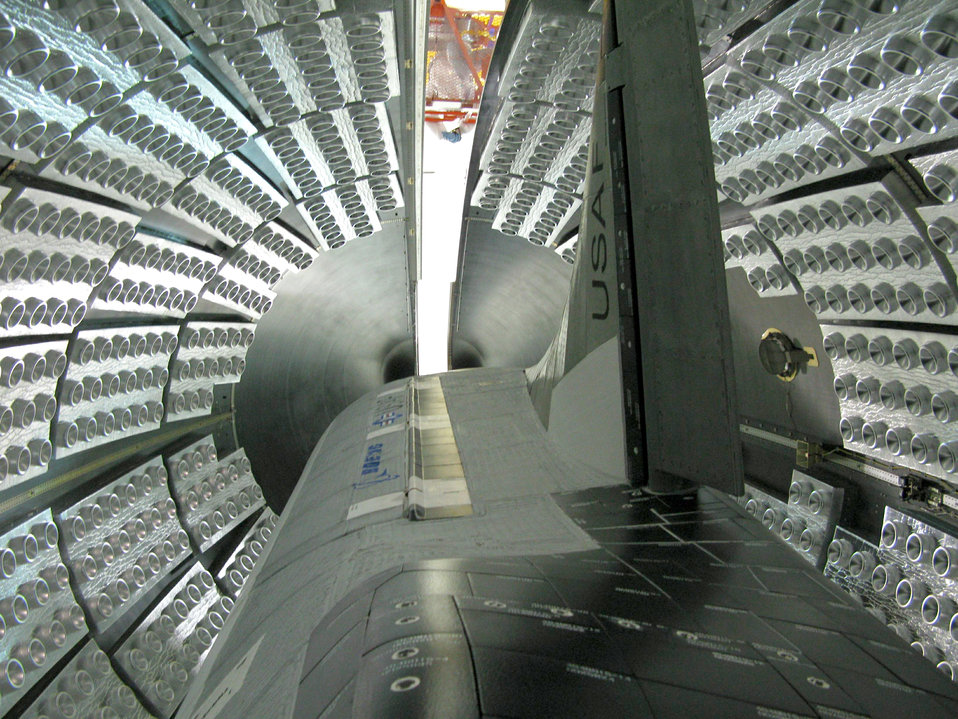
X-37B Orbital Test Vehicle

The US Air Force X-37B Orbital Test Vehicle during encapsulation within the United Launch Alliance Atlas V 5-meter fairing Feb. 8, 2011, at Astrotech in Titusville,
Fla. The fairing protects and carries the OTV into space.